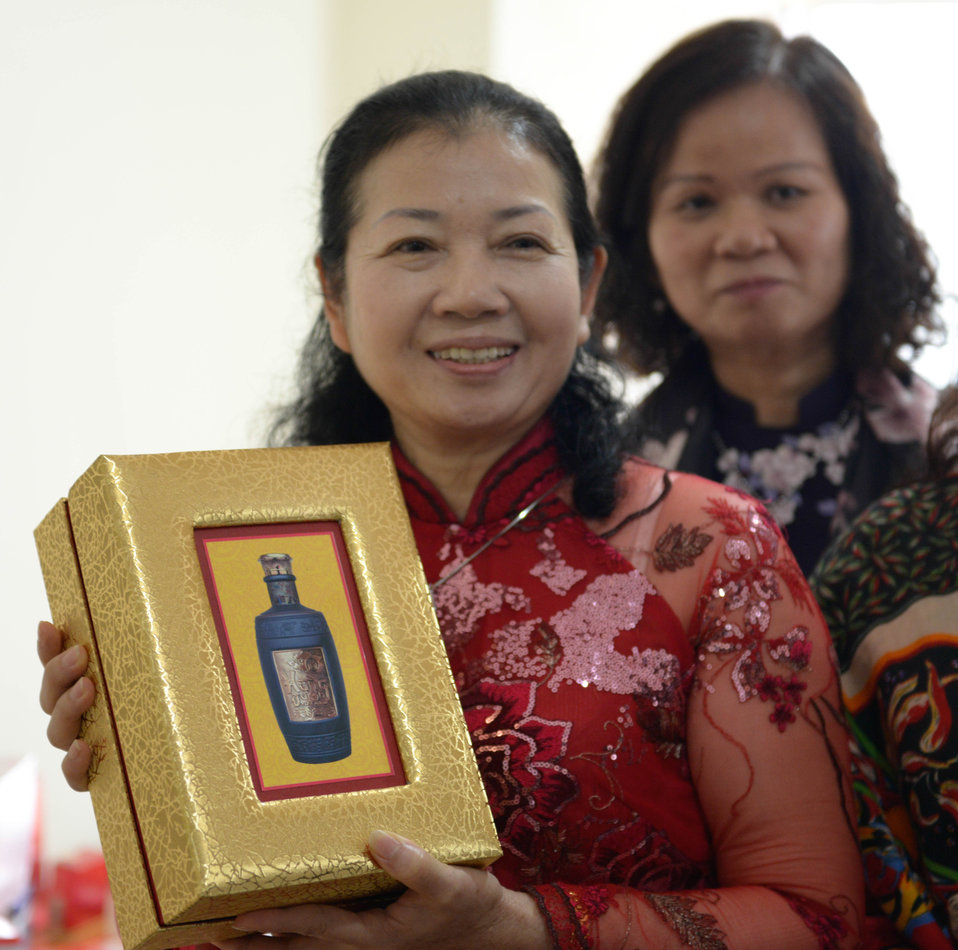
Women entrepreneurs showcases some of the products they produce

Phu Tho, Vietnam. March 1, 2014.